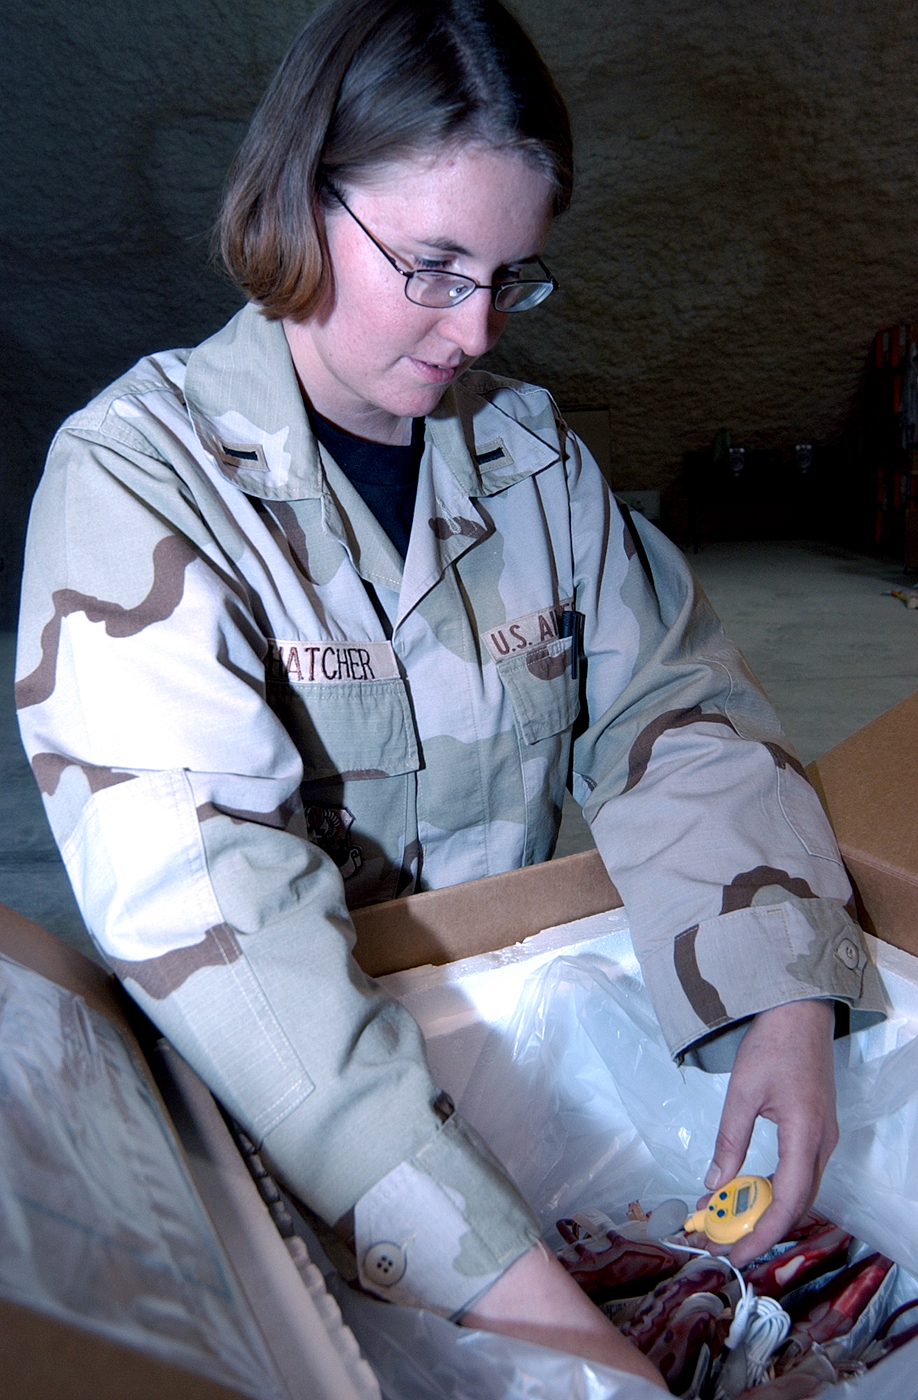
Blood Supply

AL UDEID AIR BASE, Qatar -- First Lt. Sara Hatcher monitors the temperature of a box of several bags of blood as it gets moved to a temporary storage refrigerator. Each box holds different blood types to ensure supplies are evenly distributed. The lieutenant is the chief of the 379th Expeditionary Medical Group's blood transshipment center and is deployed from Davis-Monthan Air Force Base, Ariz.